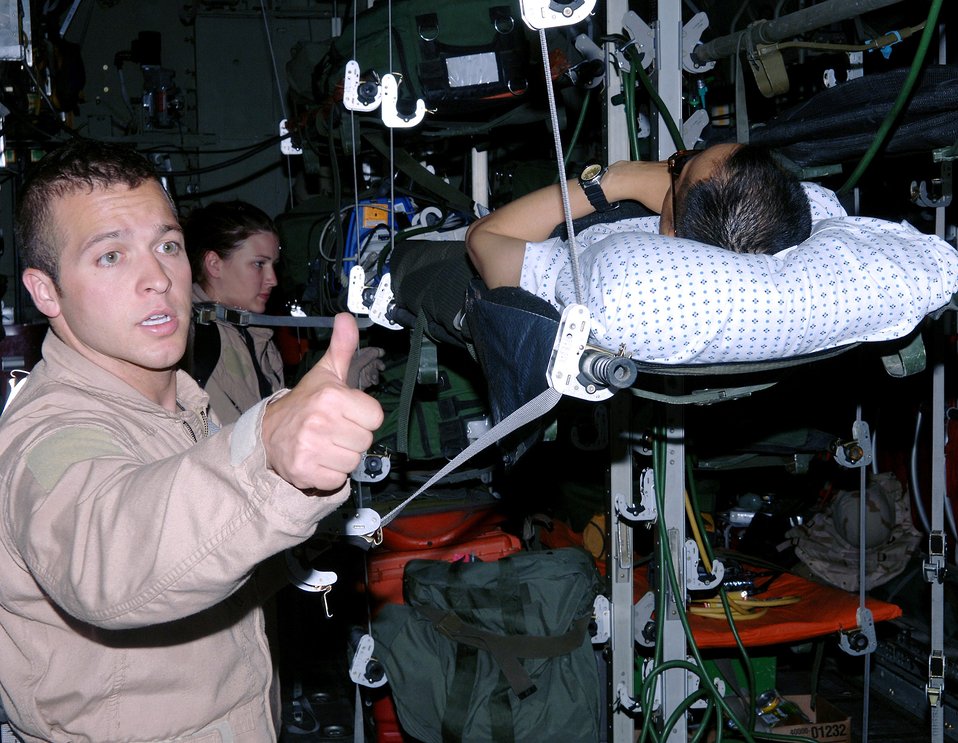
Saving servicemembers' lives one flight at a time

Staff Sgt. Eric Emmett signals that his litter patient is secure in a C-130 Hercules June 5 at Forward Operating Base Salerno, Afghanistan, prior to flying to Bagram Air Base, Afghanistan. Sergeant Emmett is a medical technician with the 455th Expeditionary Aeromedical Evacuation Flight and is deployed from the Wyoming Air National Guard's 153rd Airlift Wing.